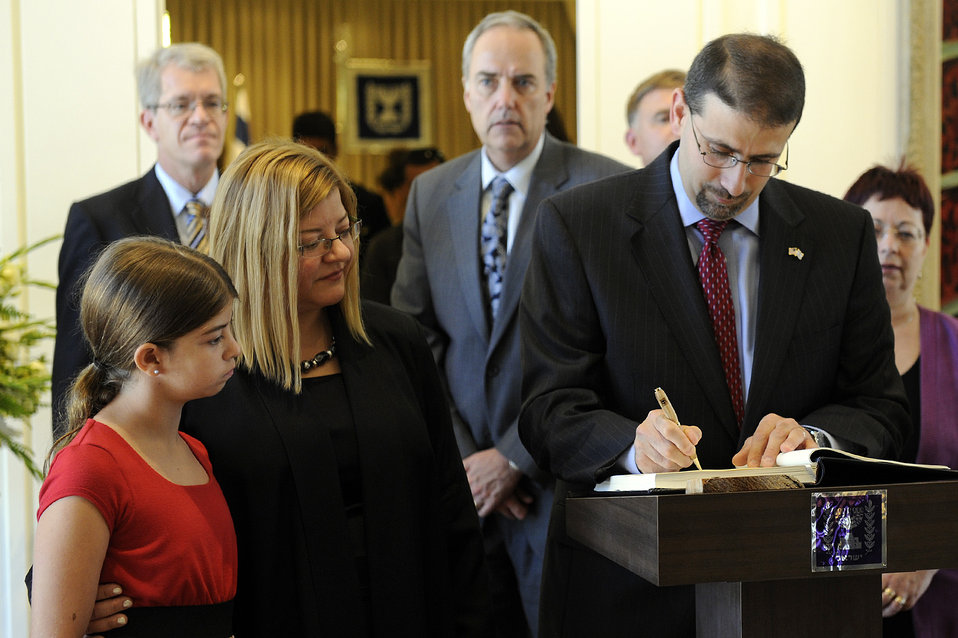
Ambassador Shapiro Signs Israeli President Peres' Guest Book

U.S. Ambassador to Israel Daniel B. Shapiro signs Israeli President Shimon Peres' guest book after presenting his credentials at the President's residence in Jerusalem on August 3, 2011.